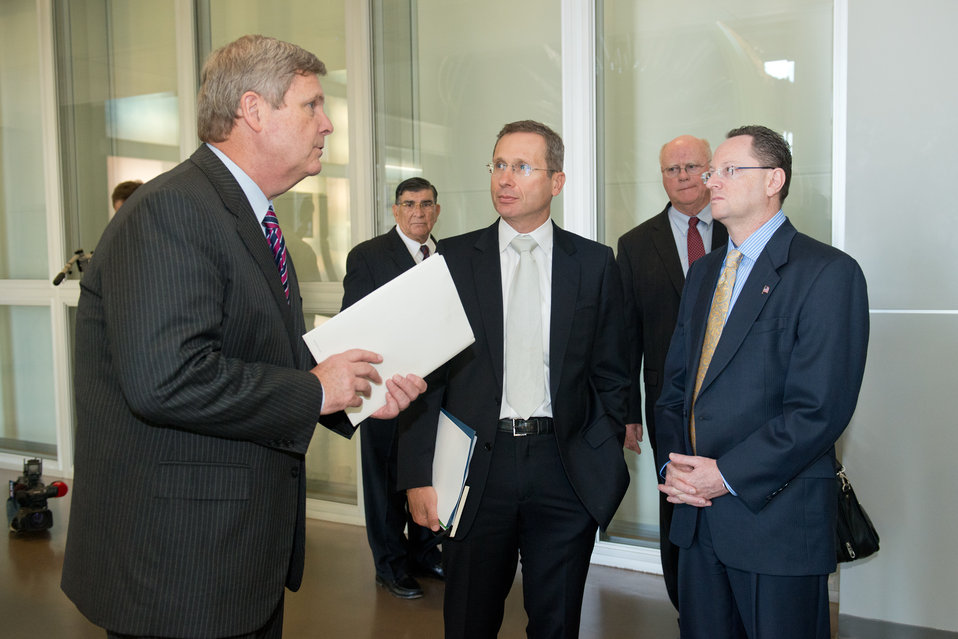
Agriculture Secretary Tom Vilsack confers with G.E. Aviation Chief Marketing Officer Laurent Rouaud (left) and Marketing Executive Tom Lodge (right) following a tour of G.E. Aviation Headquarters at the company’s Learning Centre in suburban Cincinnati, OH on Wednesday, June 27, 2012. Secretary Vilsack was in Ohio to highlight the U.S. Department of Agriculture’s (USDA) collaboration with the Ohio Aerospace Institute, air carriers and producer groups to develop a Midwest-regional approach to providing renewable jet fuel at G.E Aviation’s Cincinnati-area facilities.